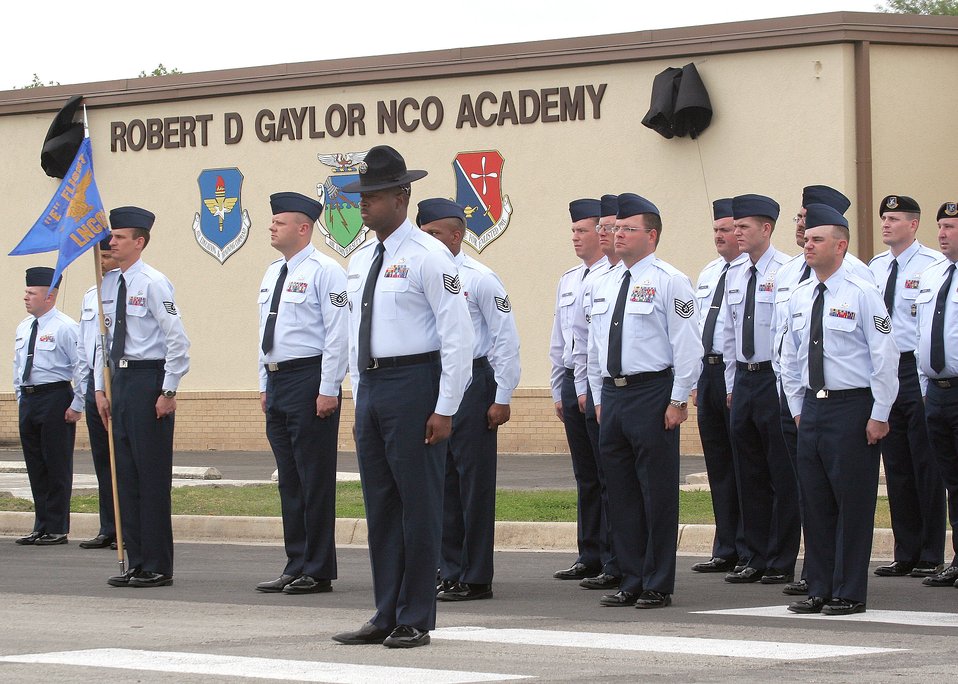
Lackland NCO academy renamed to honor CMSAF Gaylor

Graduating Class 06-3